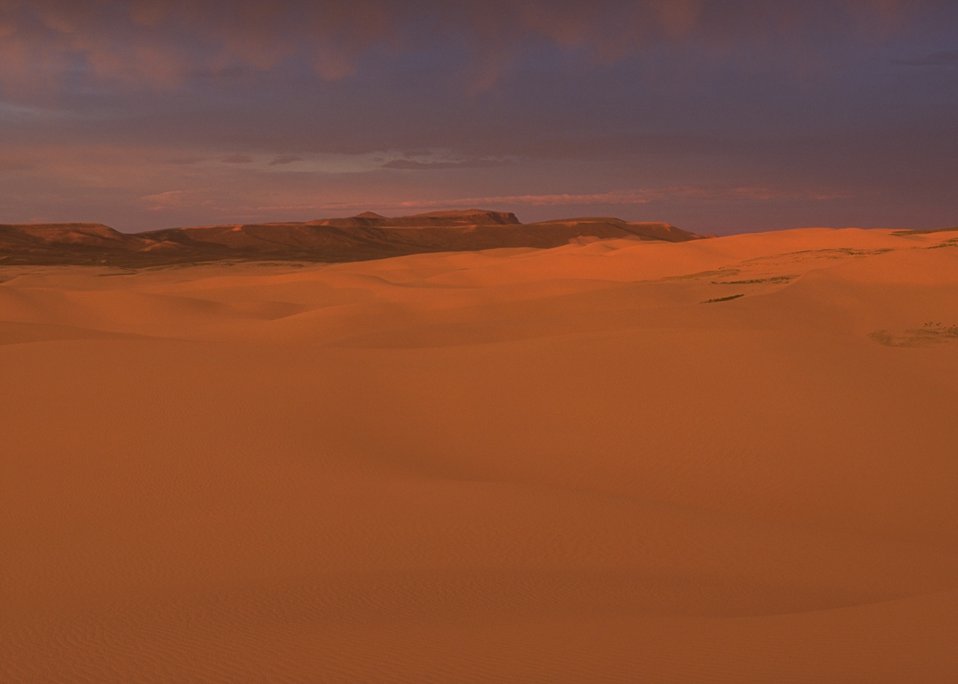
Passing storm at sunset over OHV Sand Dunes Area, Rock Springs Field Office.